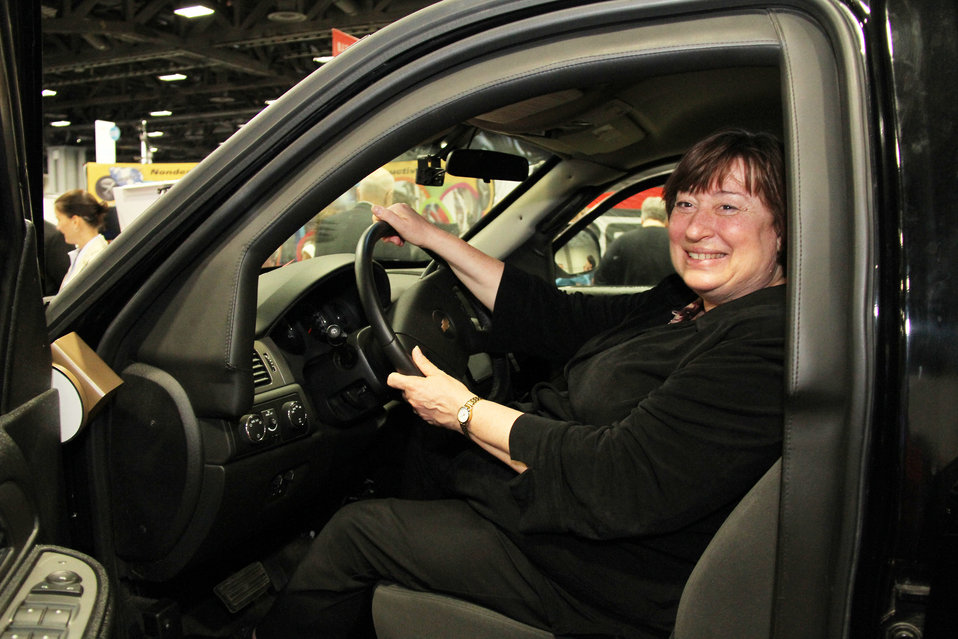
Under Secretary Novelli Sits Behind the Wheel of a Diplomatic Security Armored Vehicle

Under Secretary Catherine Novelli sits behind the wheel of a Diplomatic Security armored vehicle at the Department of State exhibit at the USA Science and Engineering Festival in Washington, DC on April 25, 2014.